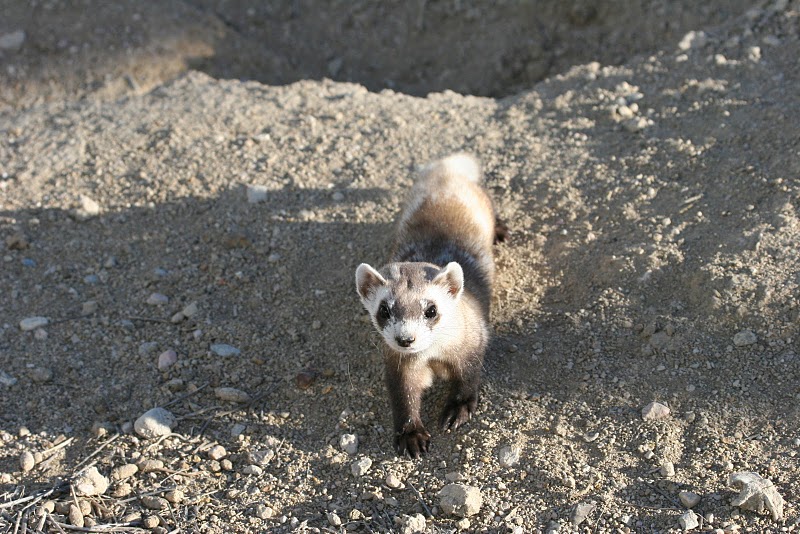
Black-footed Ferret